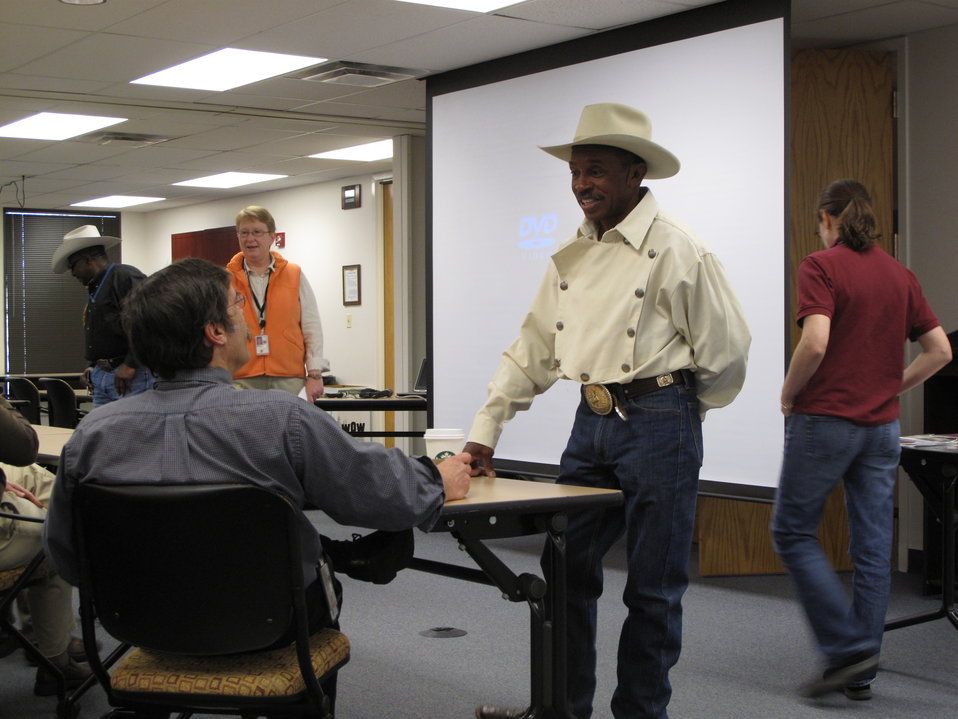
Charles Sampson and Mike Thabault

Charles Sampson greets Mike Thabault before the event celebrating National African-American Black History Month begins.